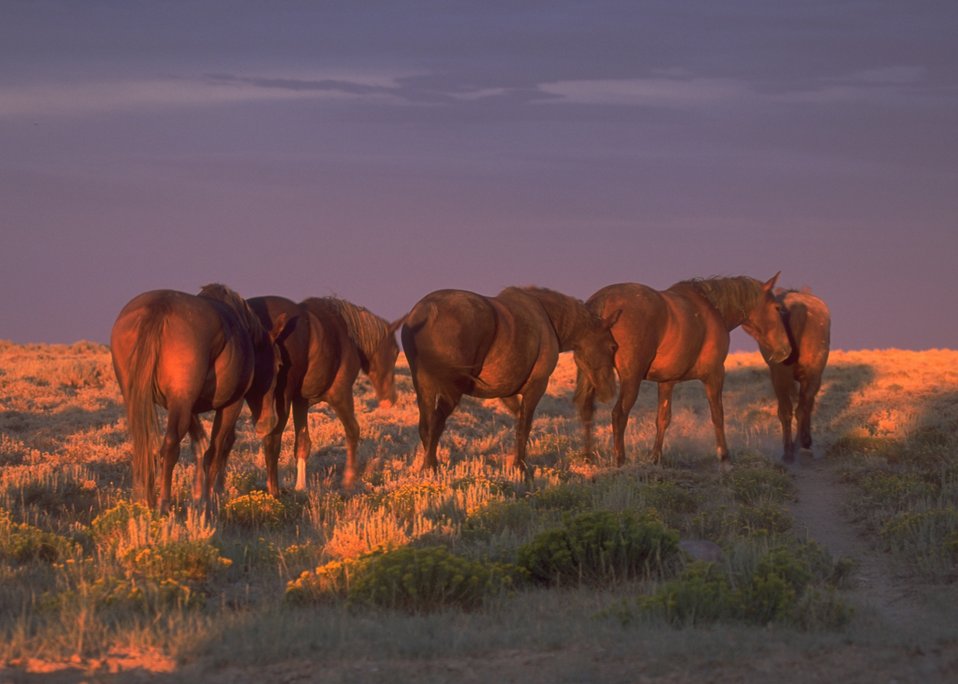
Wild horses, Rock Springs Field Office.